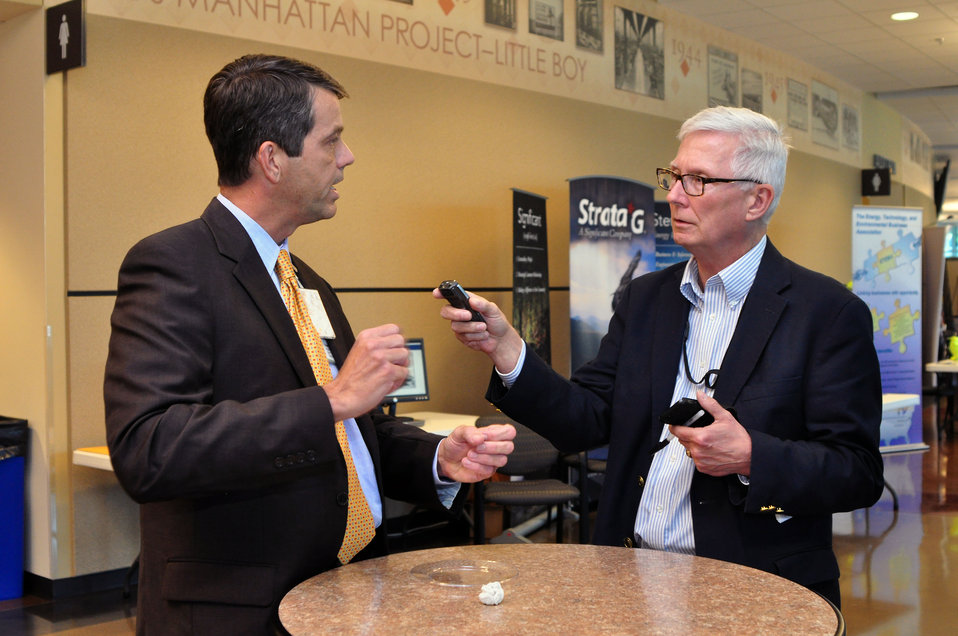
Mark Whitney Manager Oak Ridge EM Office talking with News Sentinel reporter Frank Munger

13-110a13-110a DOE photo Lynn Freeny Oak Ridge Safety Fest 9-9-2013 Oak Ridge Tennessee